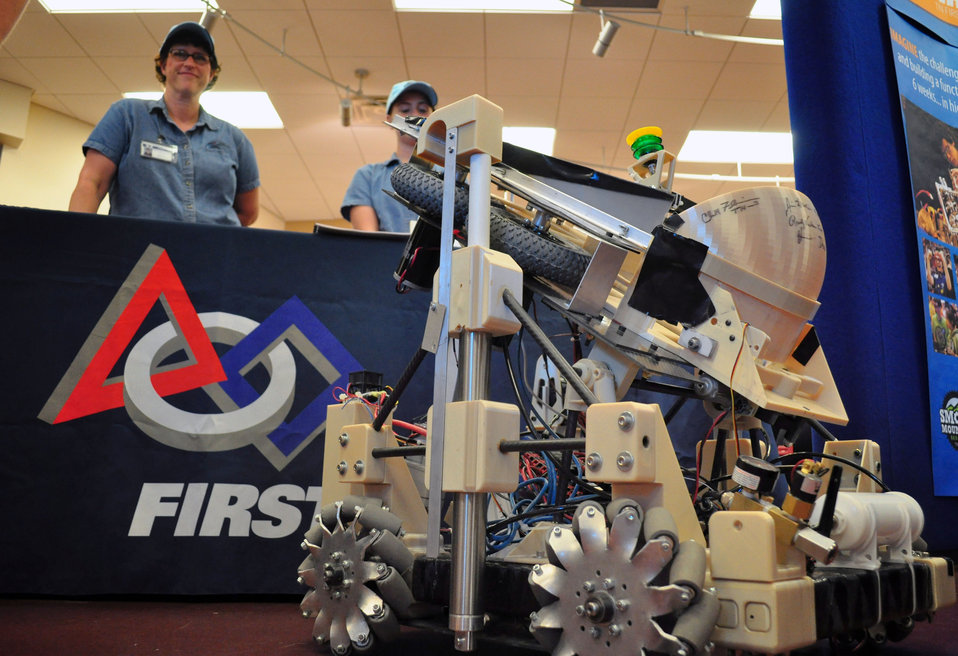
Tennessee Valley Corridor 2013 Oak Ridge

13-062 DOE photo Lynn Freeny 5-29-2013 Oak Ridge Tennessee